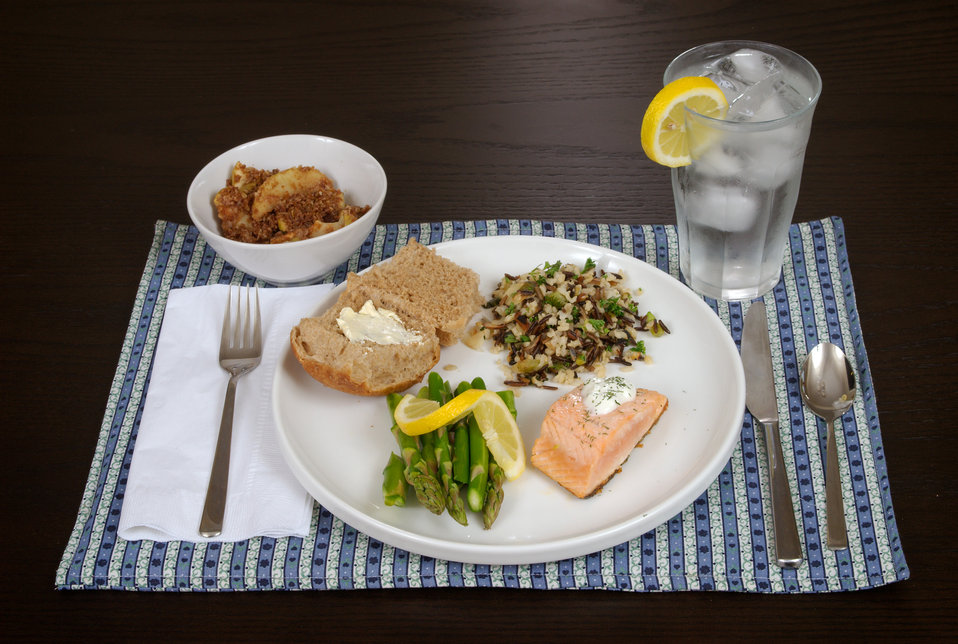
Here we have an excellent meal composed of very healthy ingredients, and in just the right portions. Beginning with baked salmon with a dill and low-fat sour cream topping, steamed asparagus topped with a lemon wedge, wild rice seasoned with parsley, a whole wheat muffin, a bowl of baked apple compote, and a glass of water with a lemon wedge. All these constituents are categorized as nutrient dense, and low calorie foods, and a great choice as a dinner meal.